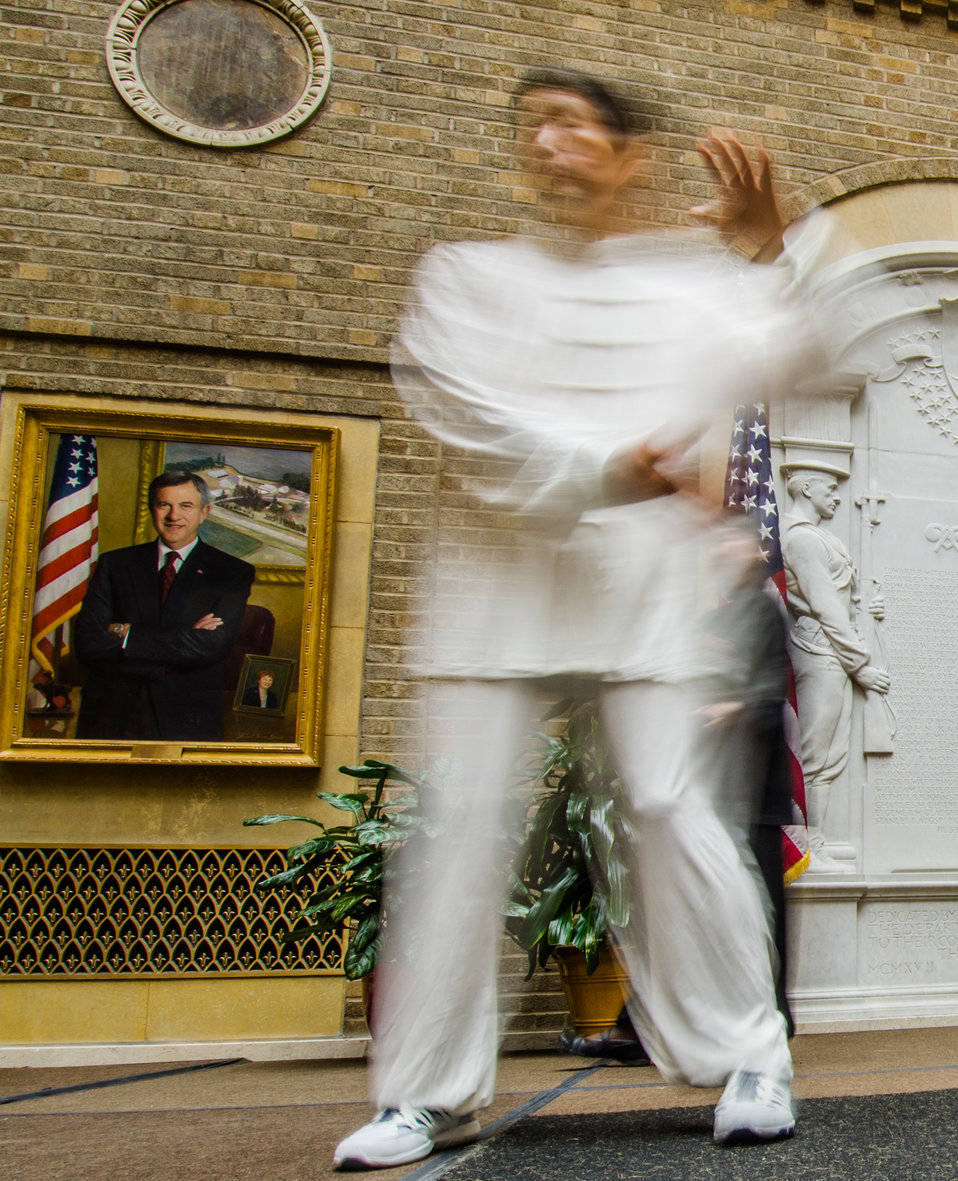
U.S. Department of Agriculture (USDA) employees Albert Chang, Mark Xu, Haijiang Wang MeiXu and Uni Li, from (respectively) Rural Development (RD), Foreign Agricultural Service (FAS), Grain Inspection, Packers & Stockyards Administration (GIPSA), Agricultural Marketing Service (AMS) and Departmental Management (DM); demonstrate the Chinese martial art of tai chi, during the USDA Asian Pacific American Heritage Month Observance, at the USDA headquarters, Whitten Building patio, in Washington, D.C., on Thursday, May 23, 2013. This year’s theme is “Building leadership; Embracing the Cultural Values and Inclusions.”